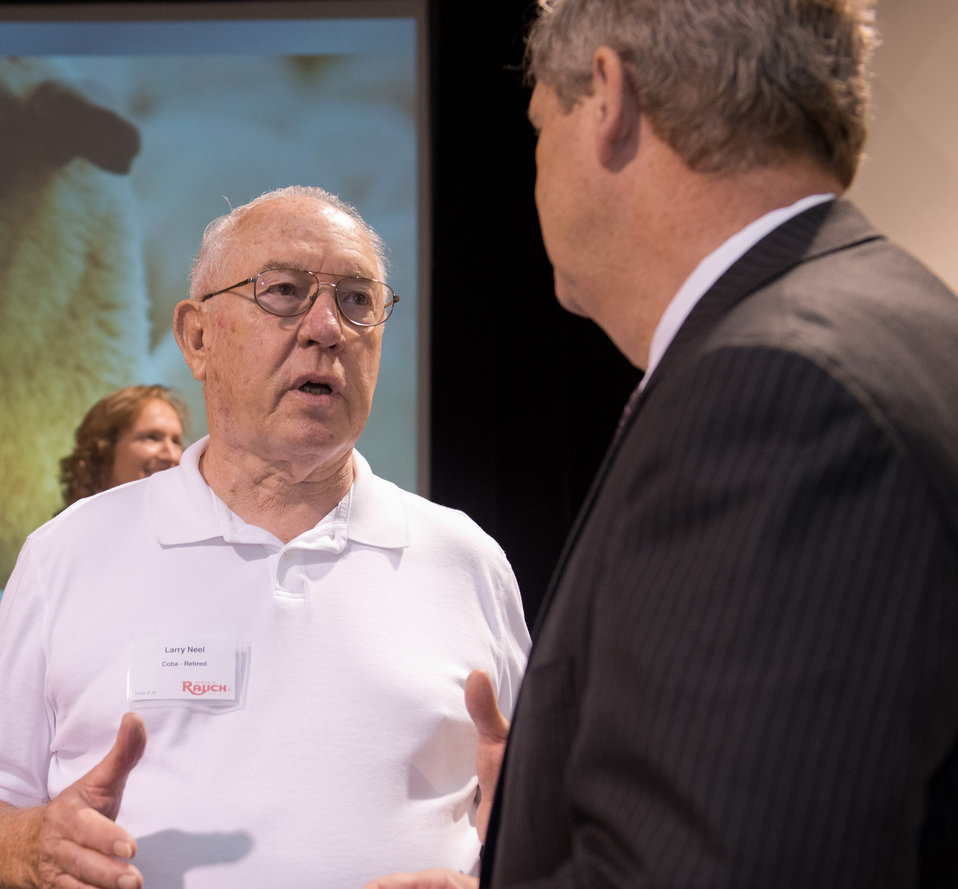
COBA/Select Sires representative Larry Neel and Agriculture Secretary Tom Vilsack discuss the impact the drought is having on livestock at the Ohio Agricultural Council Hall of Fame Breakfast in Columbus, OH on Friday, August 3, 2012.